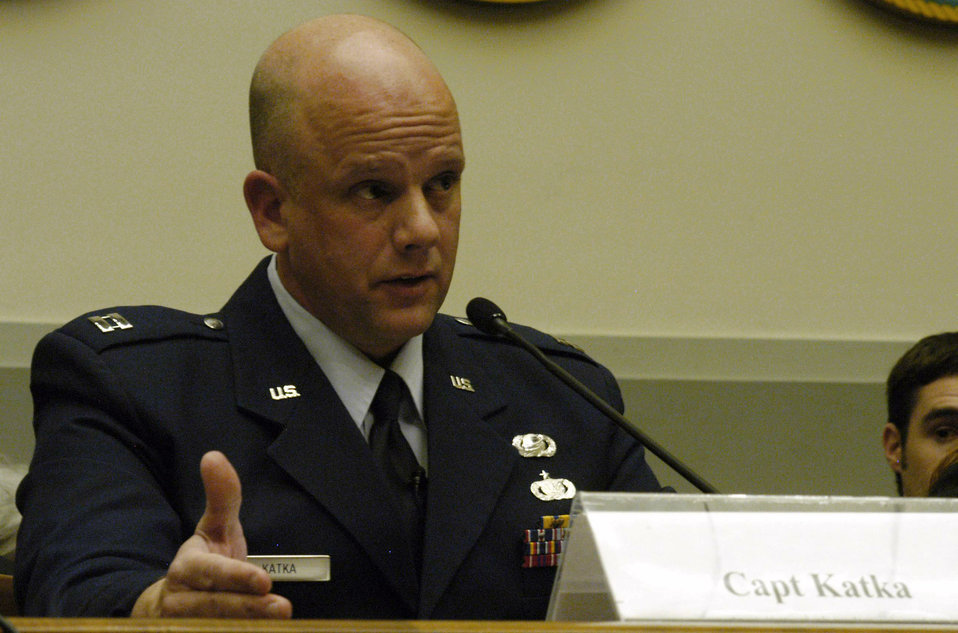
Captain explains SARC program to House subcommittee

Capt. Daniel Katka responds to questions from members of the House Armed Services Committee on Capitol Hill Jan. 28. Captain Katka is a sexual assault response coordinator from Lackland Air Force Base, Texas. A panel of sister service representatives joined the captain to answer questions from the Military Personnel Subcommittee to discuss SARC programs.